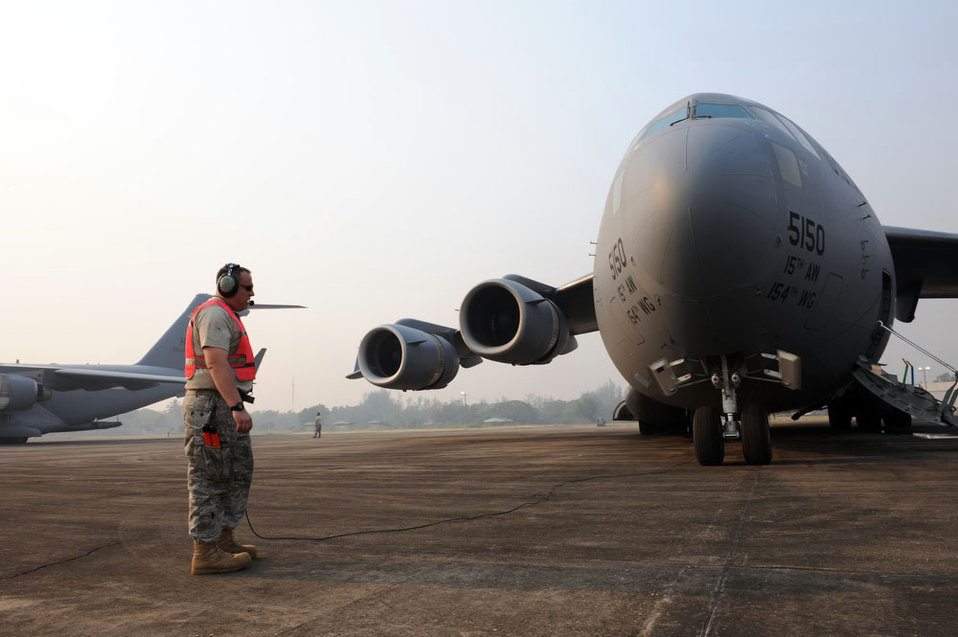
Cope Tiger 2010

Staff Sgt. Travis Weigel communicates with C-17 Globemaster III pilots before the crew departs for a mission in support of Cope Tiger 2010 March 8, 2010, at Udon Thani Royal Thai Air Force Base, Thailand. Sergeant Weigel is a crew chief from the 703rd Aircraft Maintenance Squadron at Elmendorf Air Force Base, Alaska.